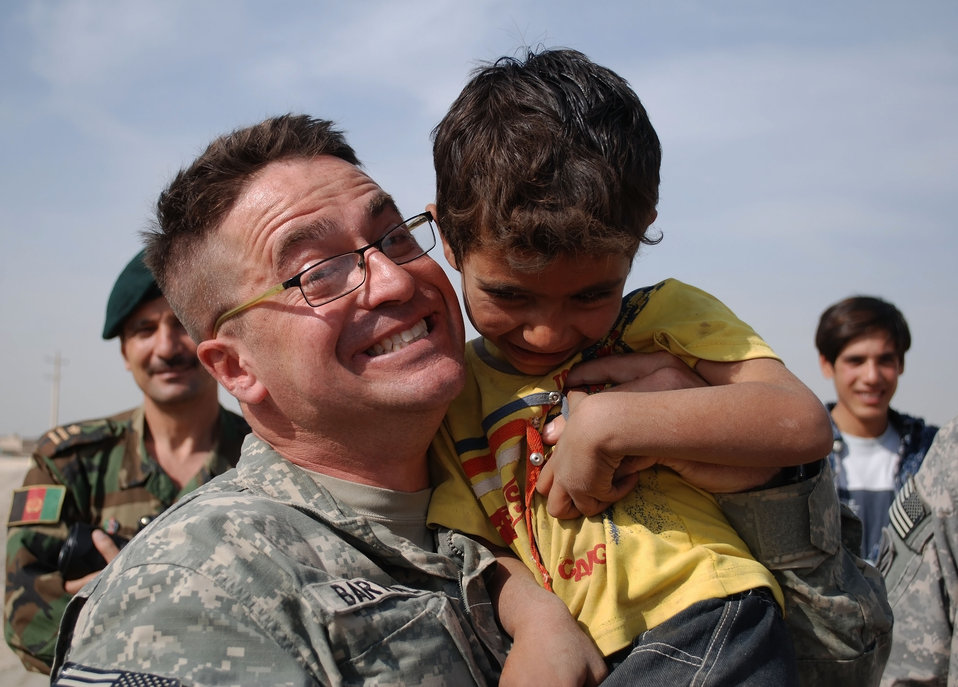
'On the Road' in Balkh Province